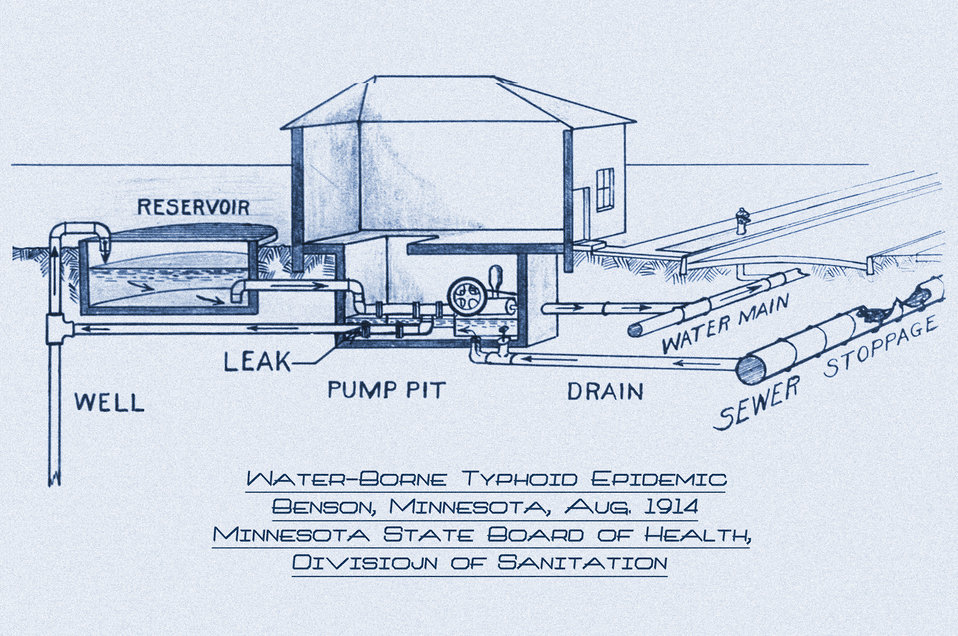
This historic 1921 diagrammatic sketch, which had been digitally enhanced and colorized, depicted the water pumping station at Benson, Minnesota at the time of a water-borne typhoid fever epidemic in August, 1914. In the center of the sketch, the artist had indicated a leak in the 'pump pit', which contributed to the water supply's contamination.